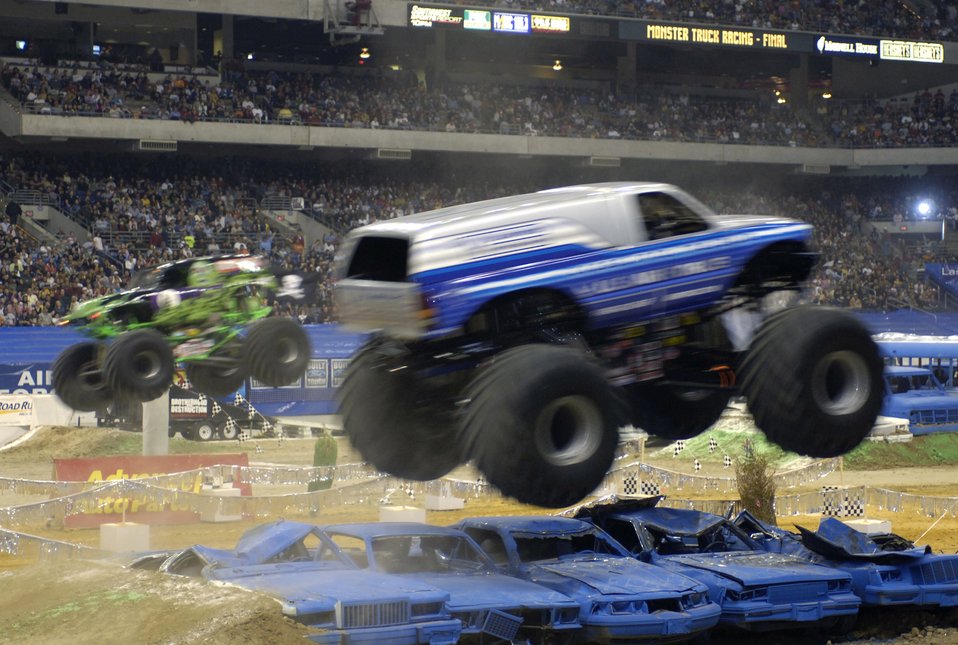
Monster recruiter

SAN ANTONIO (AFPN) -- Afterburner, the Air Force's new monster truck, leaps over some crushed cars during a race against Grave Digger at the San Antonio Monster Jam, Jan. 14. This is only the second race in which the truck, one of the newest Air Force recruiting tools, has competed. Afterburner, driven by Paul Cohen, made the finals Jan. 14, but was edged out by Grave Digger in the final match.